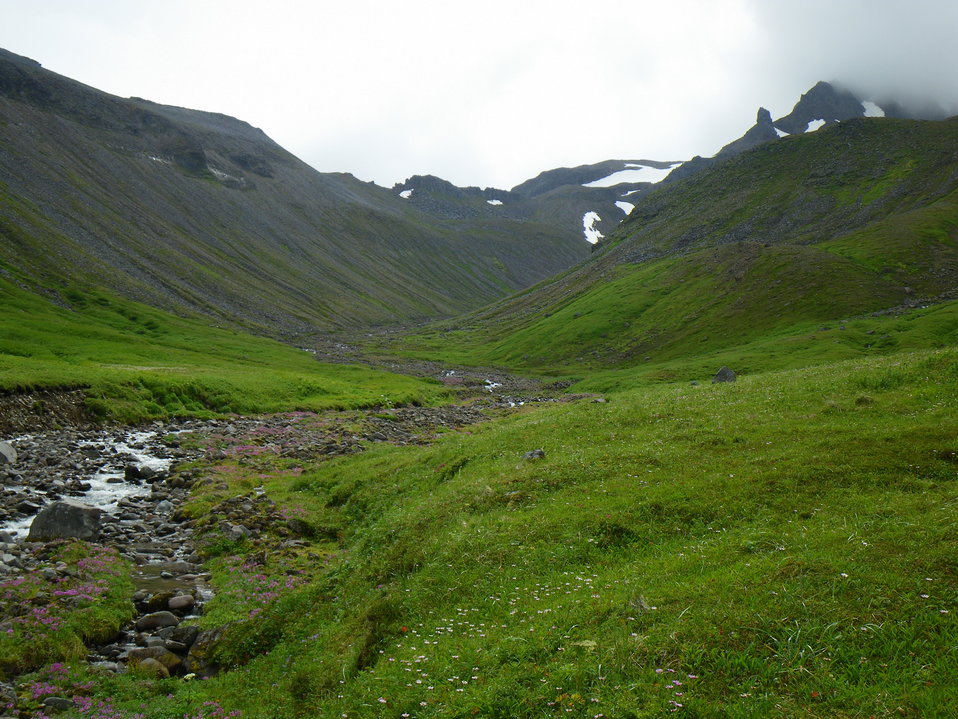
Izembek Wilderness

Wilderness near Frosty Peak, Izembek National Wildlife Refuge
Photo by Kristine Sowl,
USFWS, Public Domain